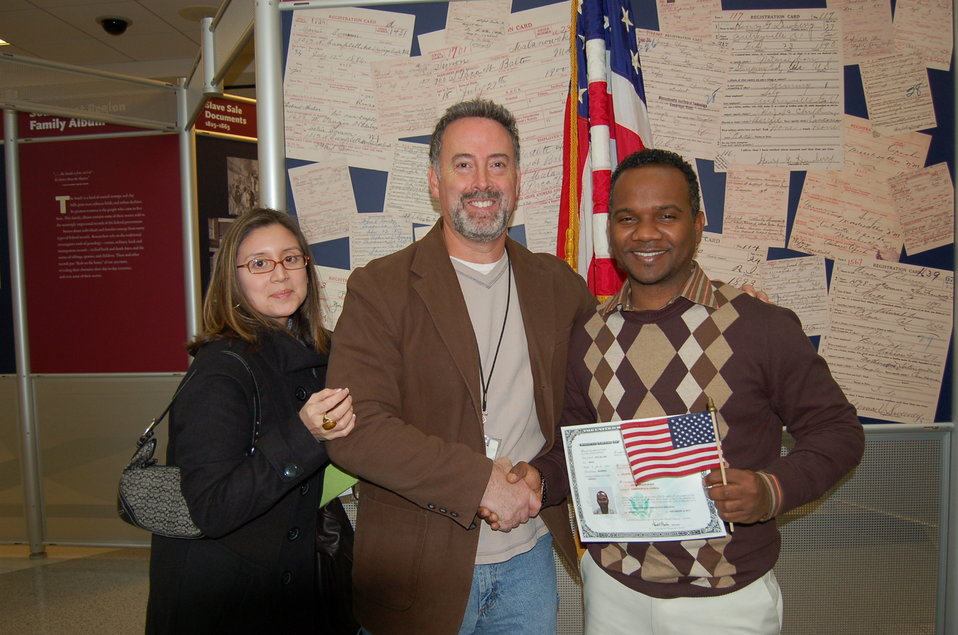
New Citizens